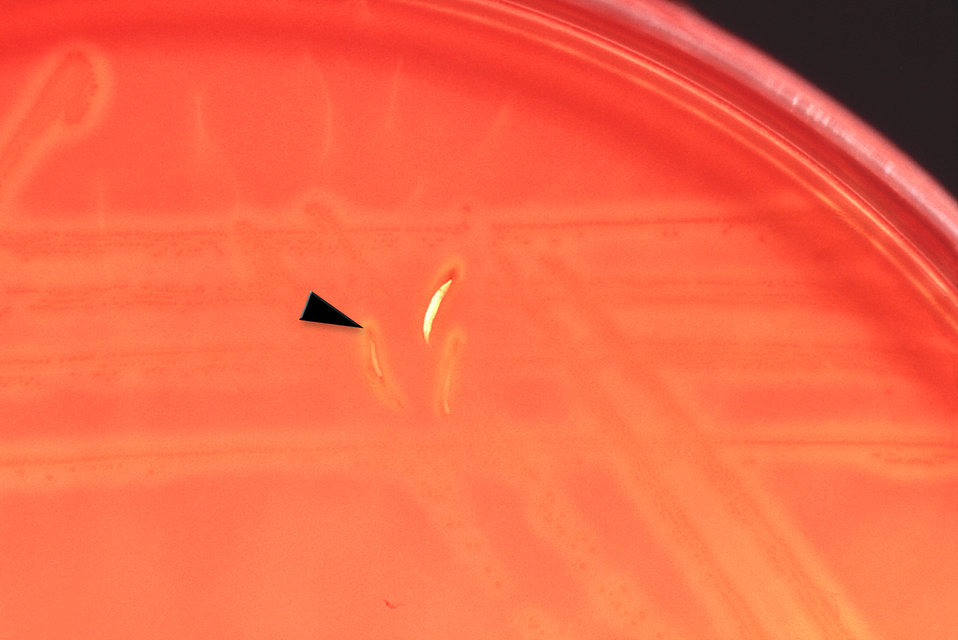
Magnified 100x, this 1977 photograph depicted a Petri dish filled with trypticase soy agar medium containing 5% defibrinated sheep's blood, i.e., blood agar plate (BAP). After having been inoculated with alpha-hemolytic Streptococcus anginosus bacteria, i.e., a member of the Gram-positive viridans group of streptococci (VGS), using a streak/stab technique, the BAP was incubated in a carbon dioxide enriched atmosphere at 35oC for 24 hours. The culture grew bacterial colonies. Typical alpha-hemolytic colonies were seen adjacent to the stab sites (arrow). The hazy, faded, indistinct region surrounding each colony indicated that red blood cells (RBCs) were destroyed, or "hemolyzed", in the BAP, and that these bacteria were indeed alpha-hemolytic in nature.It is the incomplete nature of the hemolytic reaction adjacent to the colonies, which spares numbers of RBCs in the blood agar medium, that is of qualitative importance when distinguishing alpha from beta-hemolysis.